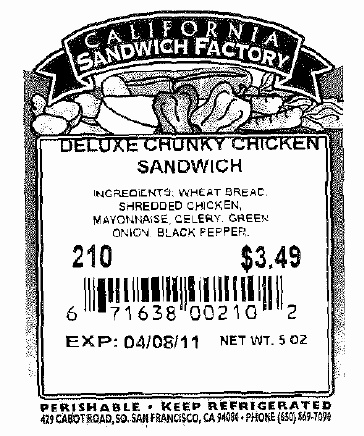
RECALLED - Sandwiches

April 12, 2011 - Product Recall - A-1 Sandwich Company Voluntarily Recalls Sandwiches with Undeclared Allergens.